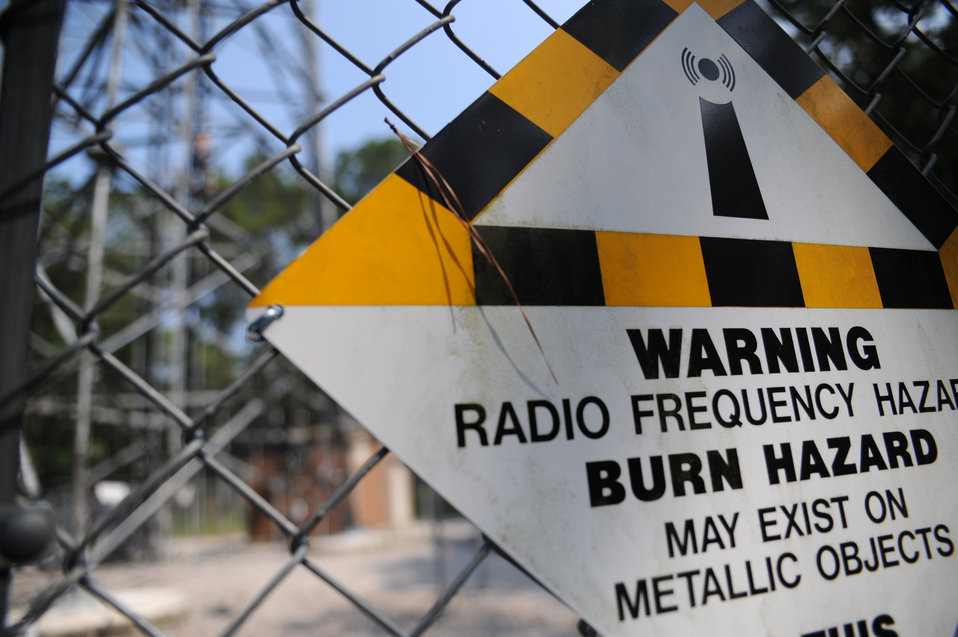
Airmen climb a radio tower

A sign warns visitors of danger near a radio frequency tower at Joint Base Charleston, S.C.